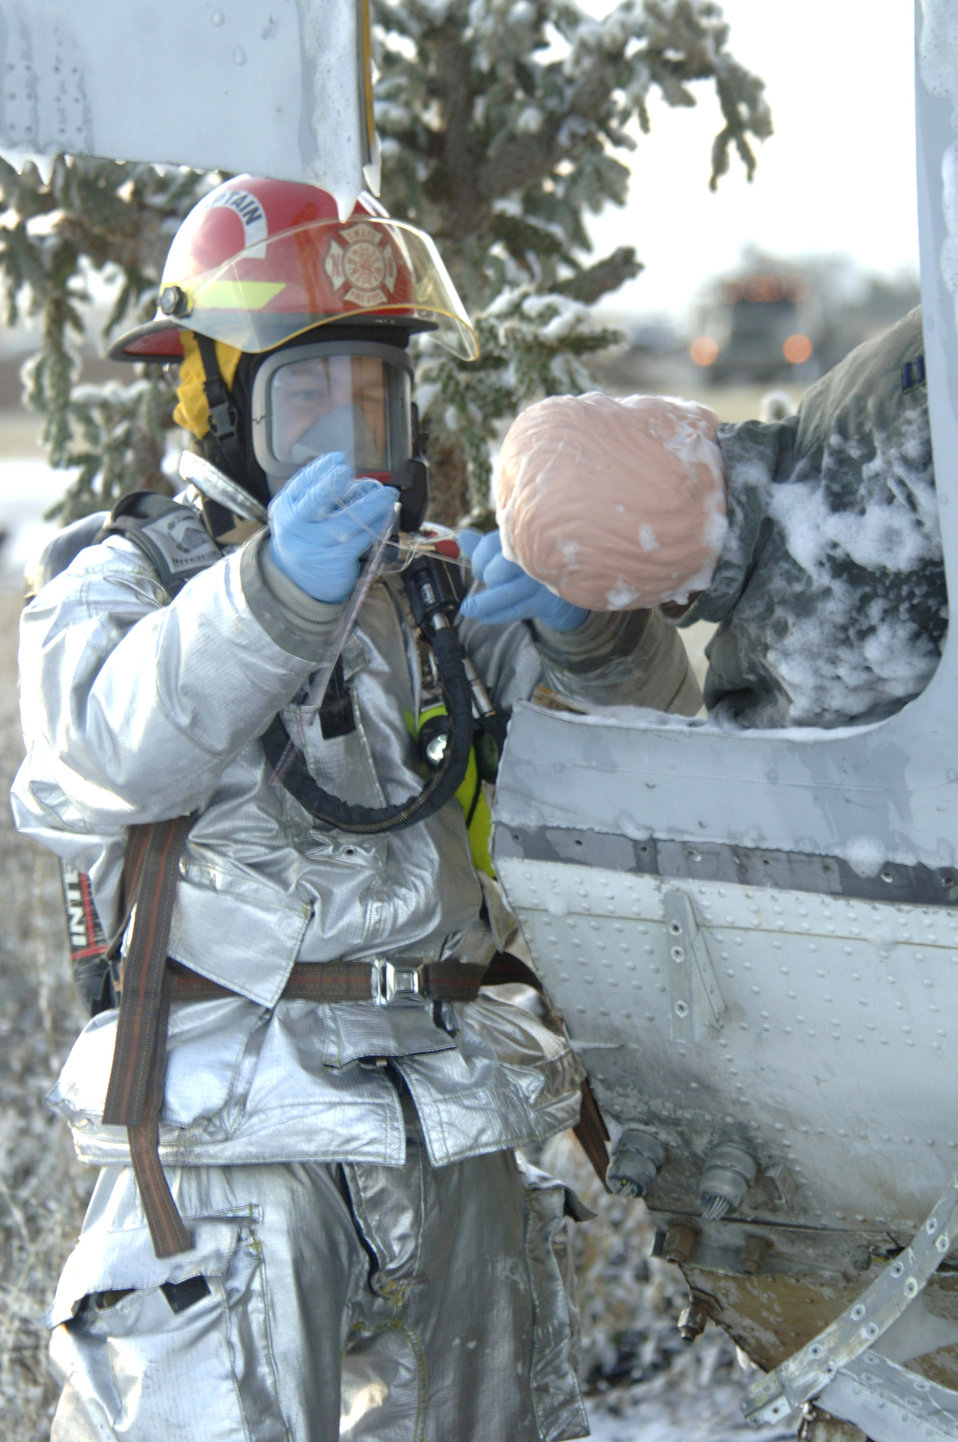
Vigilant Shield 07

A firefighter assesses the condition of a simulated survivor found at the scene of an aircraft accident Dec. 4 at Davis-Monthan Air Force Base, Ariz., during Vigilant Shield 07. Vigilant Shield 07 is a joint nuclear weapon accident exercise designed to train Department of Defense and federal agencies on response efforts as a cohesive team. The exercise involved a variety of agencies representing the county, state and federal governments.